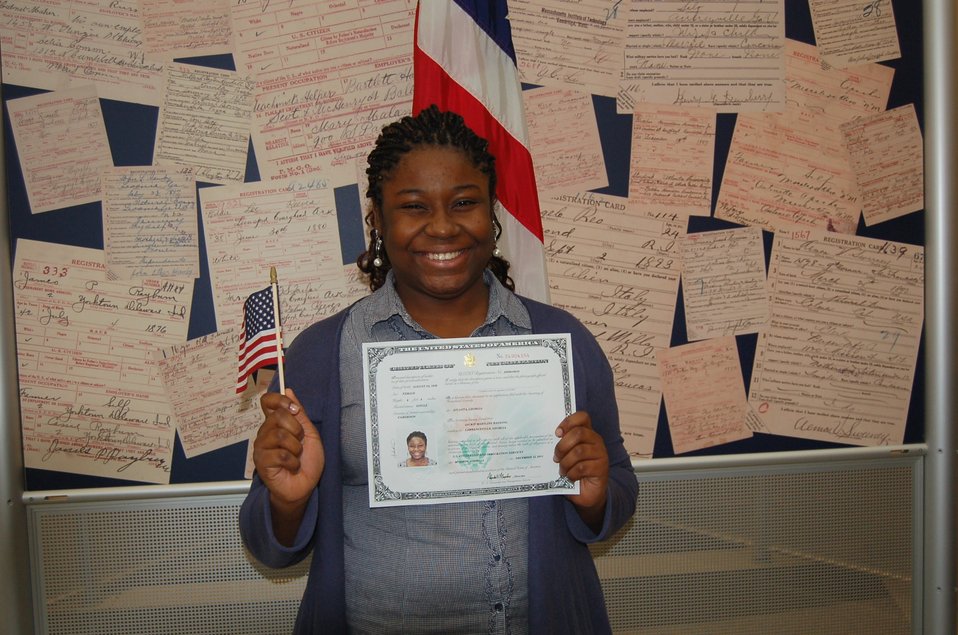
New Citizens